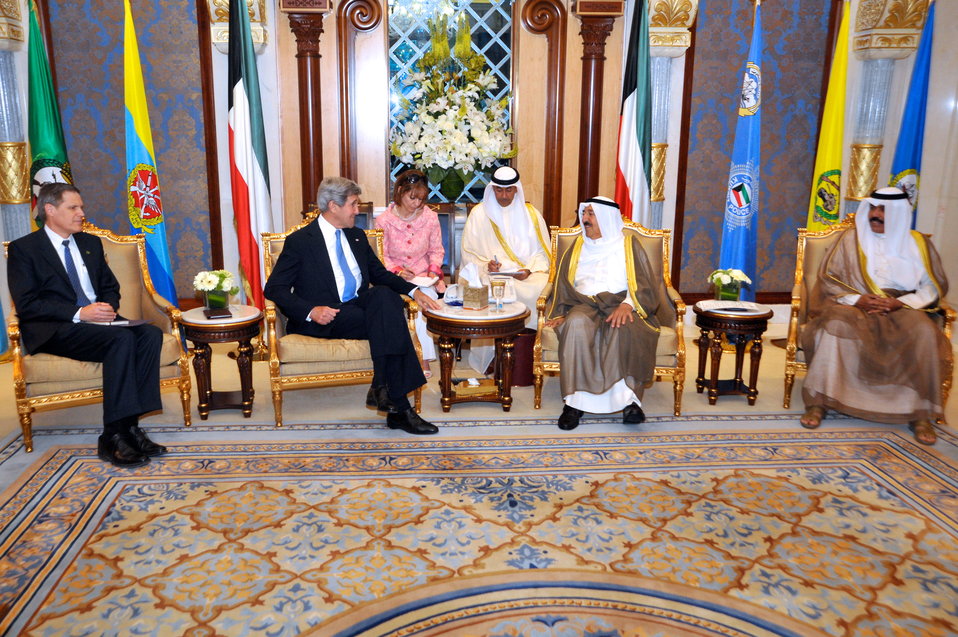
Secretary Kerry Meets With the Amir of Kuwait

U.S. Secretary of State John Kerry, accompanied by U.S. Ambassador to Kuwait Matthew Tueller, meets with Kuwaiti Amir Sheikh Sabah Al-Ahmed Al-Sabah and Crown Prince Nawaf Al-Ahmad Al-Jaber Al-Sabah during a visit to Kuwait City, Kuwait, on June 26, 2013.